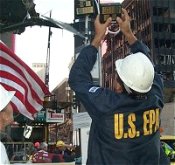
September 11th response

An EPA worker sets up air quality monitors at Ground Zero to protect the health of emergency responders and citizens.